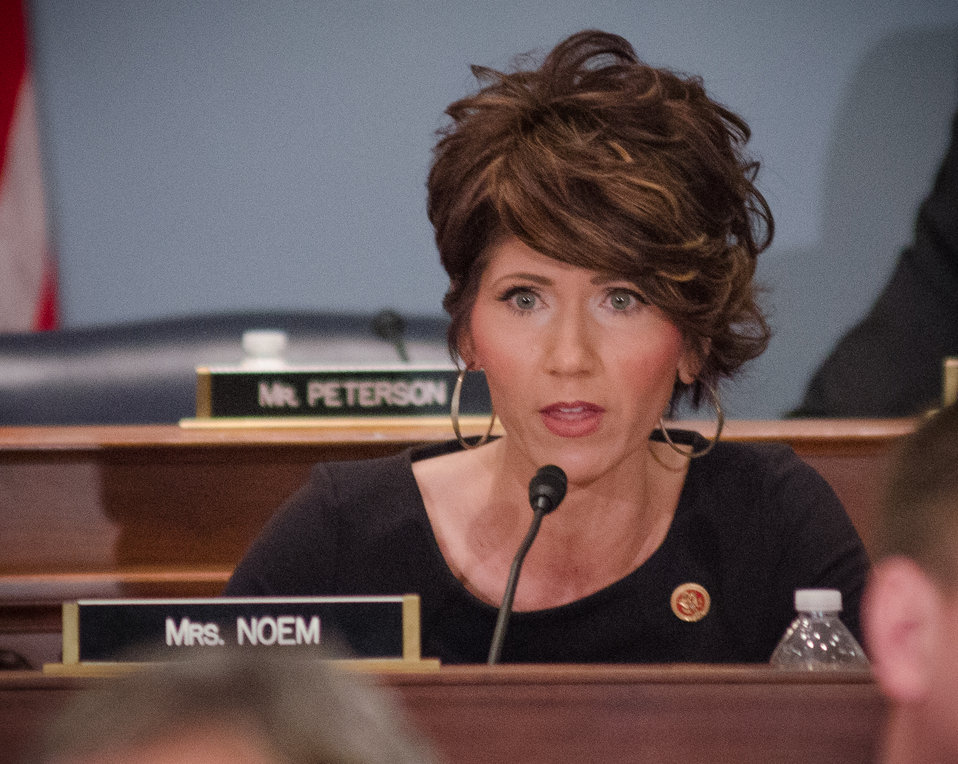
Representative Kristi Noem (SD) questions Agriculture Secretary Tom Vilsack, during his testimony before the House Agriculture Committee regarding the “State of the Rural Economy“ at the Longworth House Office Building in Washington, D.C. on Tuesday, Mar. 5, 2013.